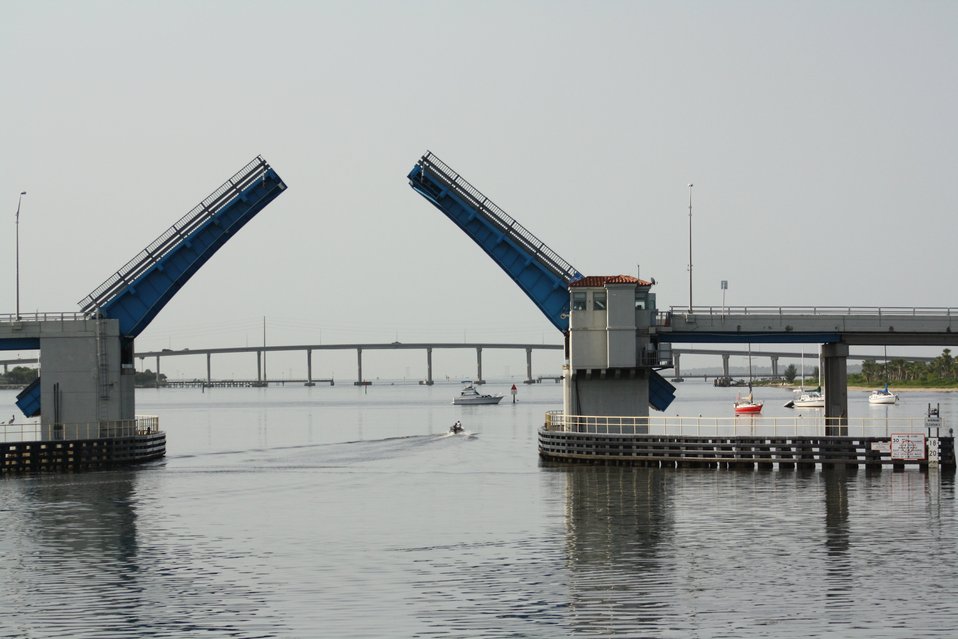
The Fort Pierce drawbridge opening for passage of the Harbor Branch ship Seward Johnson II.